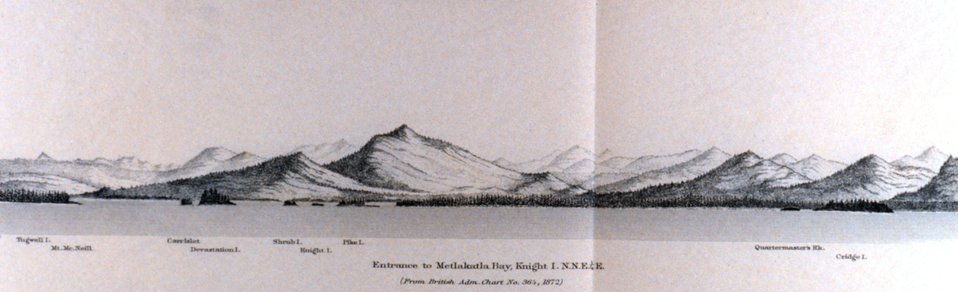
Entrance to Metlakatla Bay, Knight Island. In: Pacific Coast Pilot Alaska Part I 1883. P. 28. Library call number VK943 .N3 1883.